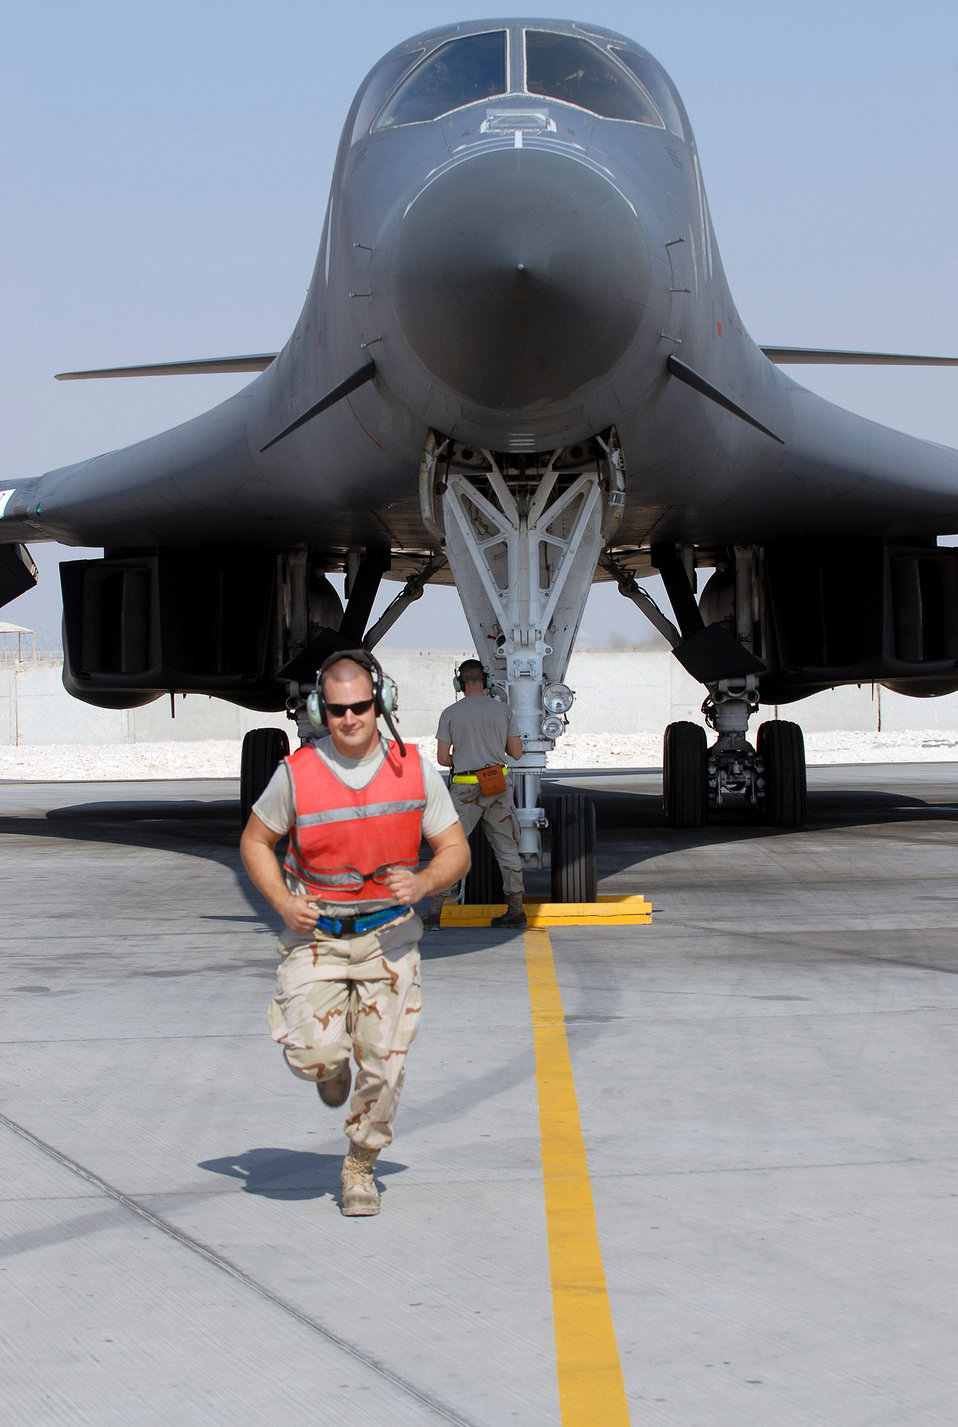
Getting a B-1B ready to launch

Senior Airman Ryan Bathke runs to his position to marshal a B-1B Lancer bomber to the taxiway for a mission Dec. 29 as Senior Airman Nathan Konkol, waits at the nose gear to pull the chocks. The Airmen are with the 379th Expeditionary Aircraft Maintenance Squadron at an air base in Southwest Asia.